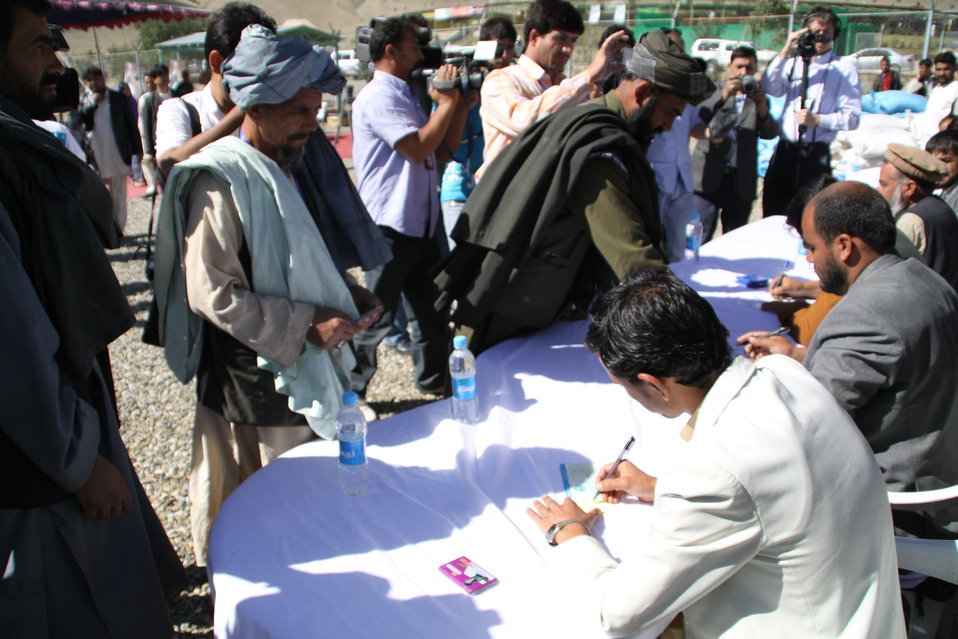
AVIPA Plus Wheat Seed Distribution 101005

US Ambassador Karl Eikenberry and USAID Acting Mission Director Kevin Brownawell joined the Minister of Agriculture, Irrigation and Livestock, H.E. Minister Mohammed Rahimi in signing a Memorandum of Understanding and distributing vouchers to area farmers for wheat and fertilizer.

US Ambassador Karl Eikenberry and USAID Acting Mission Director Kevin Brownawell joined the Minister of Agriculture, Irrigation and Livestock, H.E. Minister Mohammed Rahimi in signing a Memorandum of Understanding and distributing vouchers to area farmers for wheat and fertilizer.